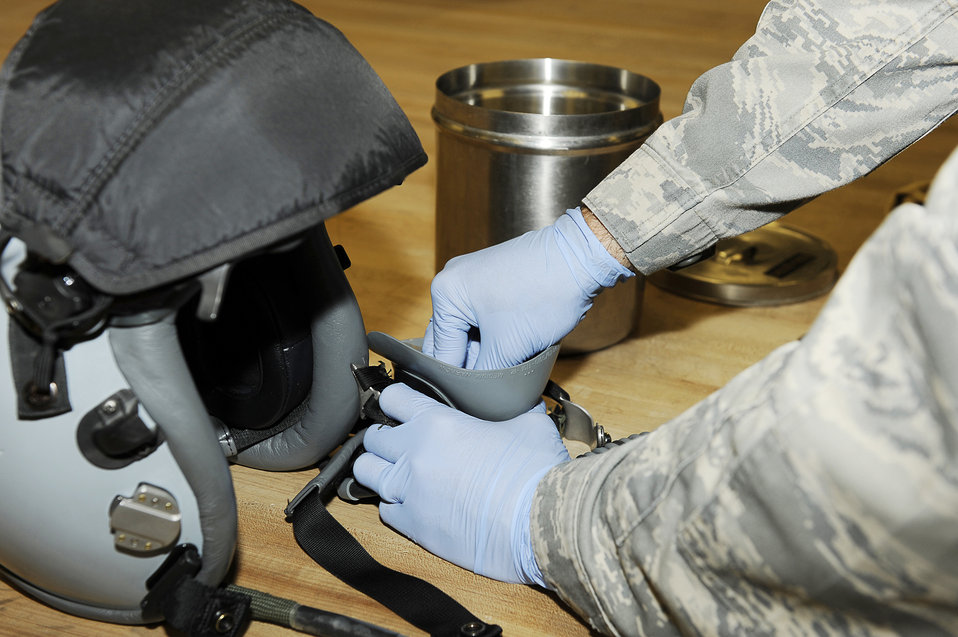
Airmen prepare for night mission at Bagram

Airman 1st Class Jeremy Betello, Life Support for the 455th Expeditionary Operation Support Squadron, cleans and prepares a helmet before a flight Jan. 4, 2010, at Bagram Airfield, Afghanistan. Airman Betello is stationed at Shaw Air Force Base, S.C.